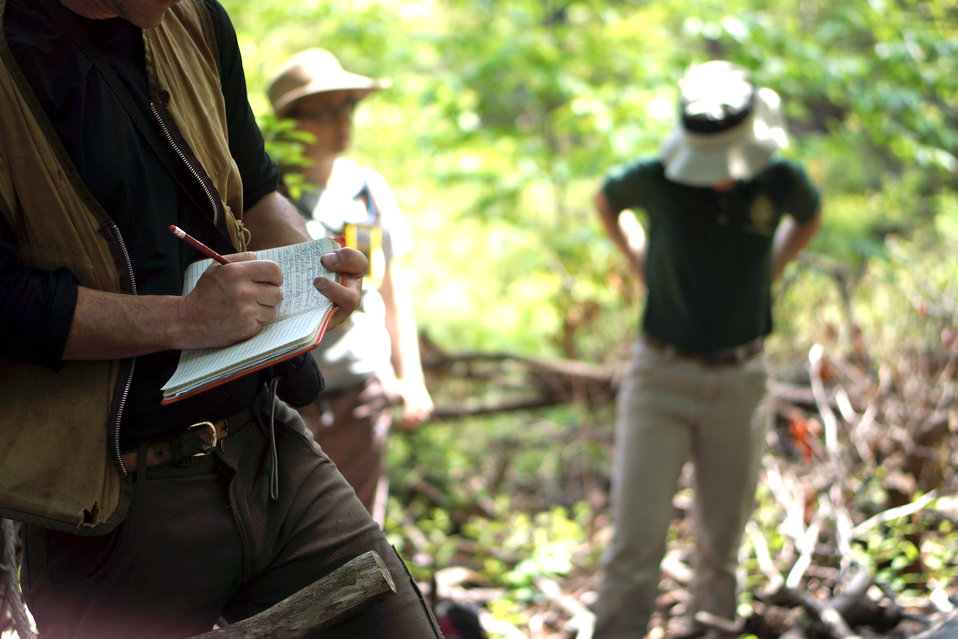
Ed Schwartzman taking notes

In May, bog conservationists from Tennessee, North Carolina, and Georgia convened in the north Georgia mountains for the spring, 2014 meeting of the Bog Learning Network. The event provided an opportunity for biologists to see, first hand, the result of management efforts at two north Georgia bogs. More importantly, the outings provided an opportunity to share innovative approaches to bog management, such as the role of the Georgia Plant Conservation Alliance in conserving rare plants and coordinating a cadre of volunteers to work on bog management.

The Bog Learning Network was convened in the winter of 2013 as a way to bring together people working for bog conservation across the Southern Appalachians. Southern Appalachian bogs are one of North America’s rarest habitats and home to many rare plants and animals.